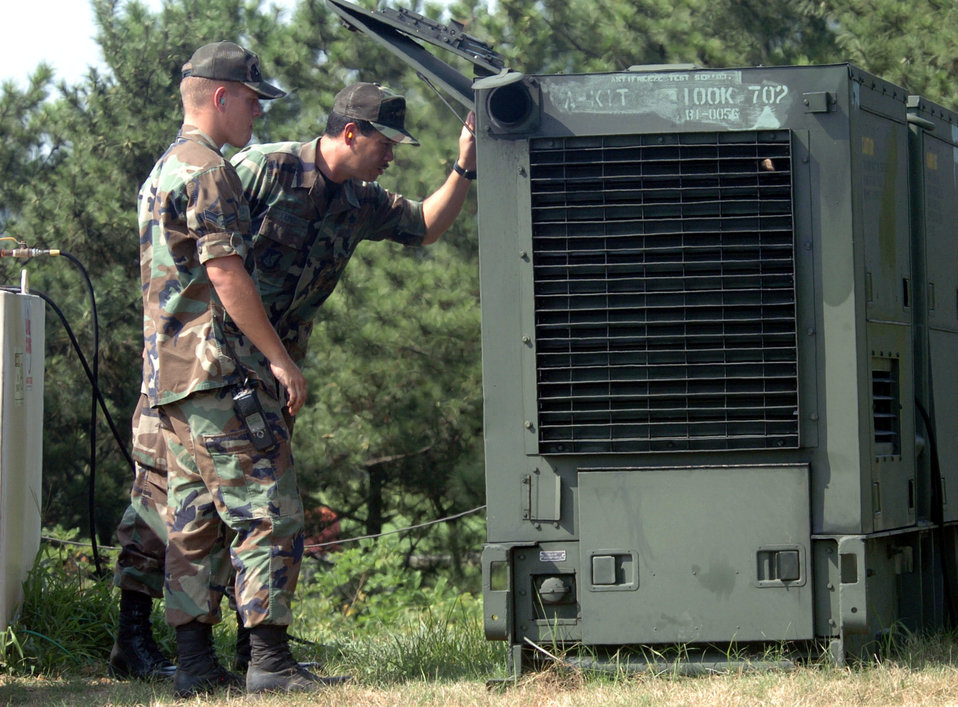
CE benefits from Nighthawk deployment

KUNSAN AIR BASE, South Korea -- Airman 1st Class David Early (left) and Senior Master Sgt. Manny Lapuz inspect a generator at tent city here. They are assigned to the 8th Civil Engineer Squadron. Civil engineers are providing a home for about 300 Airmen who are deployed here from the 49th Fighter Wing at Holloman Air Force Base, N.M.